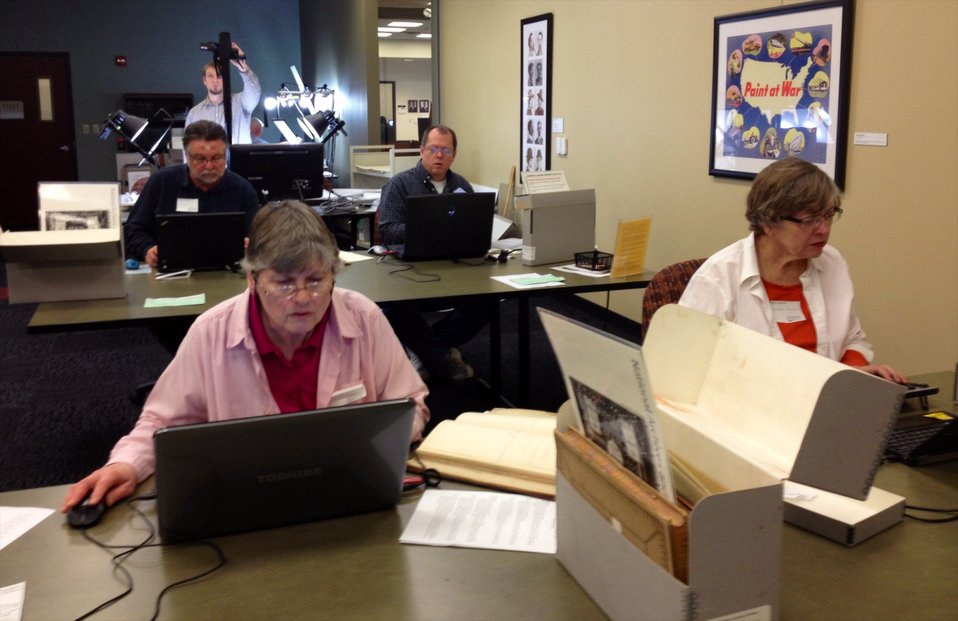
Citizen Archivist event; Location: National Archives at Kansas City - RMKC Research Room, Kansas City, MO